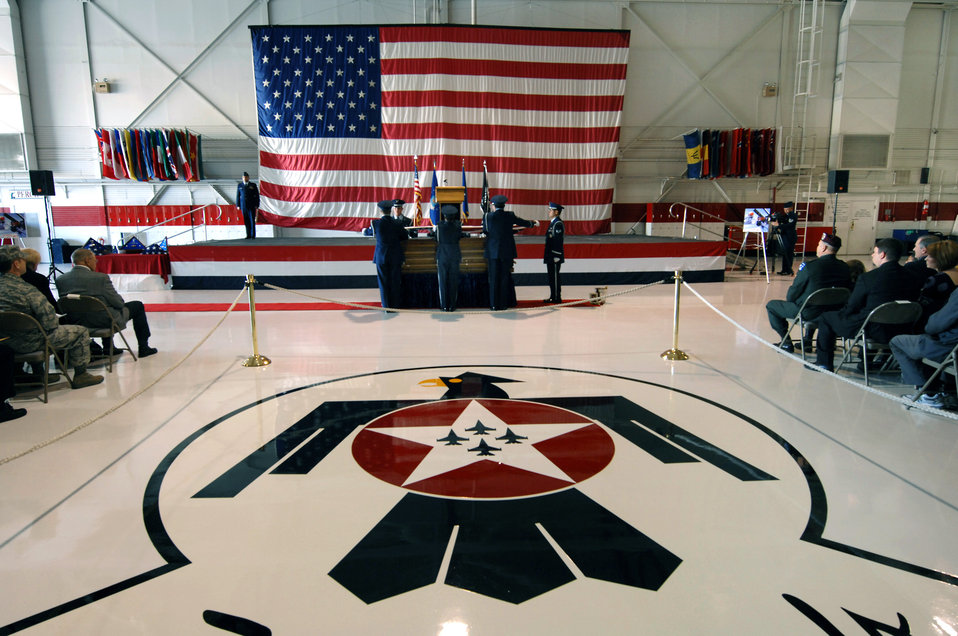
Thunderbird returns to Nellis for final farewell

Honor guard members prepare to fold the American flag during the repatriation and funeral service for Maj. Russell C. Goodman Jan. 14, 2010, at Nellis Air Force Base, Nev. Major Goodman served as the narrator for the Air Force Thunderbirds from 1964 to 1965 and was declared missing in action after his aircraft was hit by a surface-to-air missile in February 1967 while on a combat mission over North Vietnam.